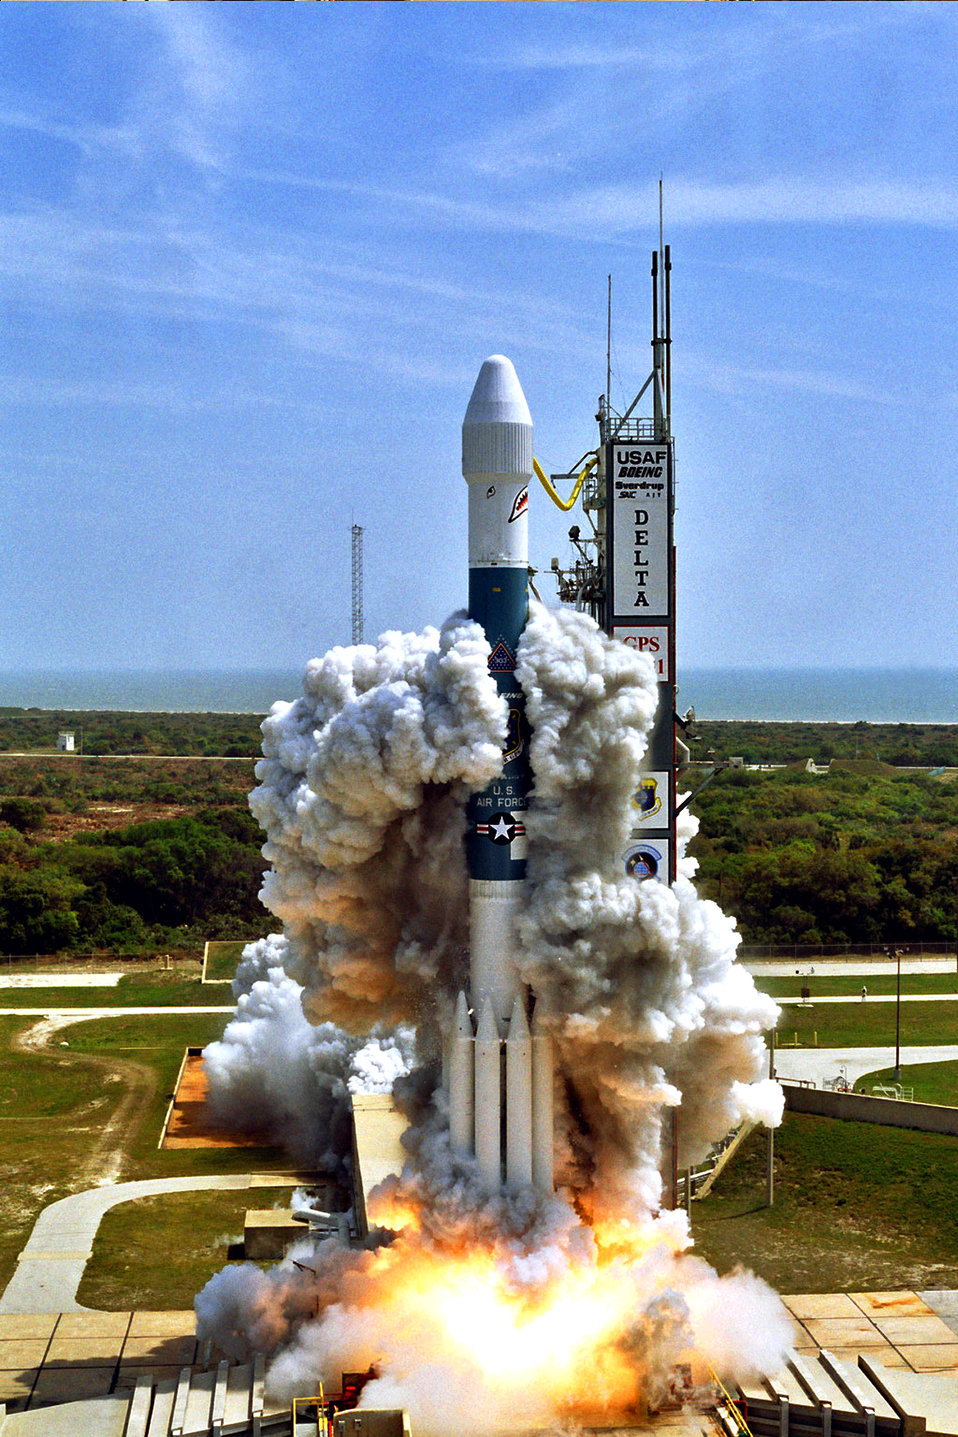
We have liftoff

CAPE CANAVERAL AIR FORCE STATION, Fla. -- A Delta II rocket carrying a Navstar Global Positioning System satellite lifts off March 20 from here. The rocket successfully delivered the payload into orbit where it will be used to support global operations.